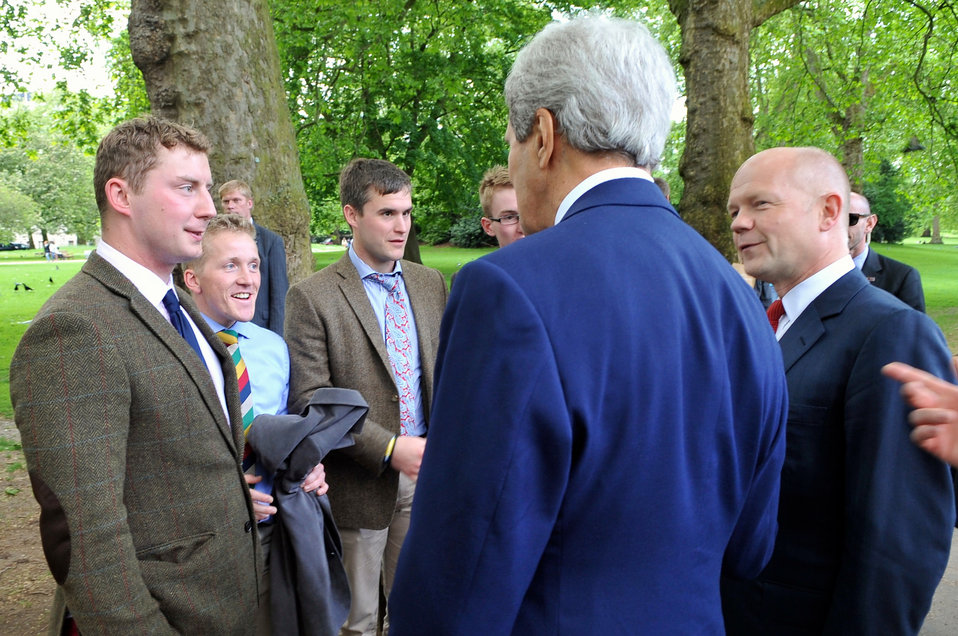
Secretaries Kerry, Hague Greet Group of British Soldiers During Walk in London

British Foreign Secretary William Hague introduces U.S. Secretary of State John Kerry to a group of British soldiers they encountered while taking a walk in St. James Park in London on May 15, 2014.